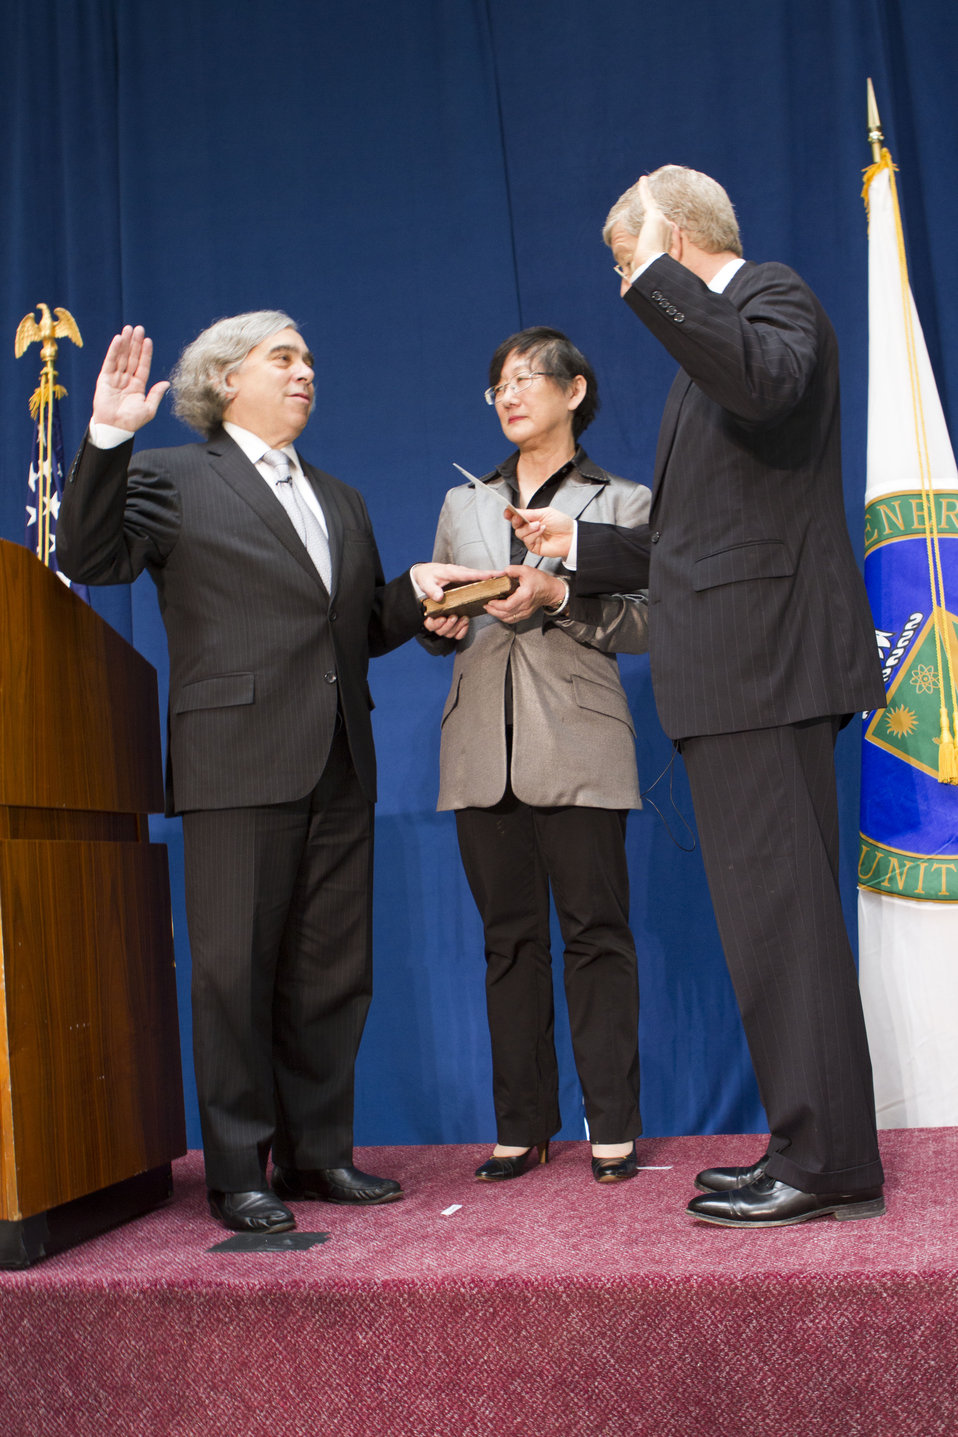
Swearing in as Secretary of Energy

Dr. Ernest Moniz (left) raises his right hand as he recites his oath of office as Secretary of Energy of the United States. He was joined by his wife, Dr. Naomi Moniz (center), and Daniel Poneman, Deputy Secretary of Energy (right).